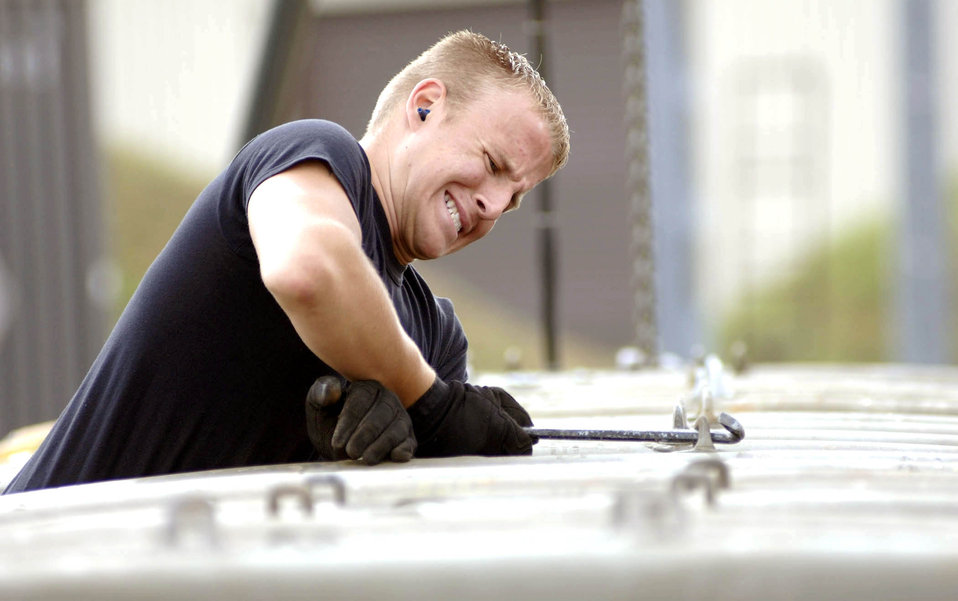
To build a better bomb

SPANGDAHLEM AIR BASE, Germany -- Airman 1st Class Timothy Flottum puts muscle power into building a Mark-82 bomb here in preparation for a live fire exercise. Airman Flottum is a munitions crewmember with the 52nd Equipment Maintenance Squadron.